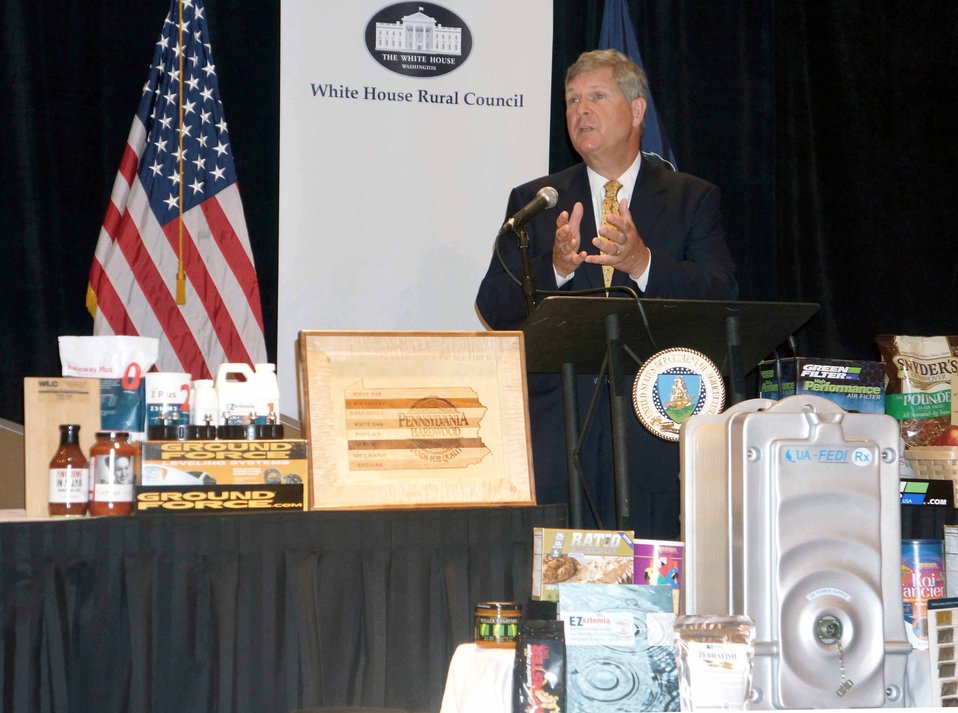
Agriculture Secretary Tom Vilsack makes Keynote Inaugural address at the “Made in Rural America Regional Forum” in Canonsburg, PA on Jun. 4, 2014. Secretary Vilsack expressed his concern that only 1% of American businesses export to other countries and 95% of consumers live outside of the U.S. USDA photo Dawn Bonsell.